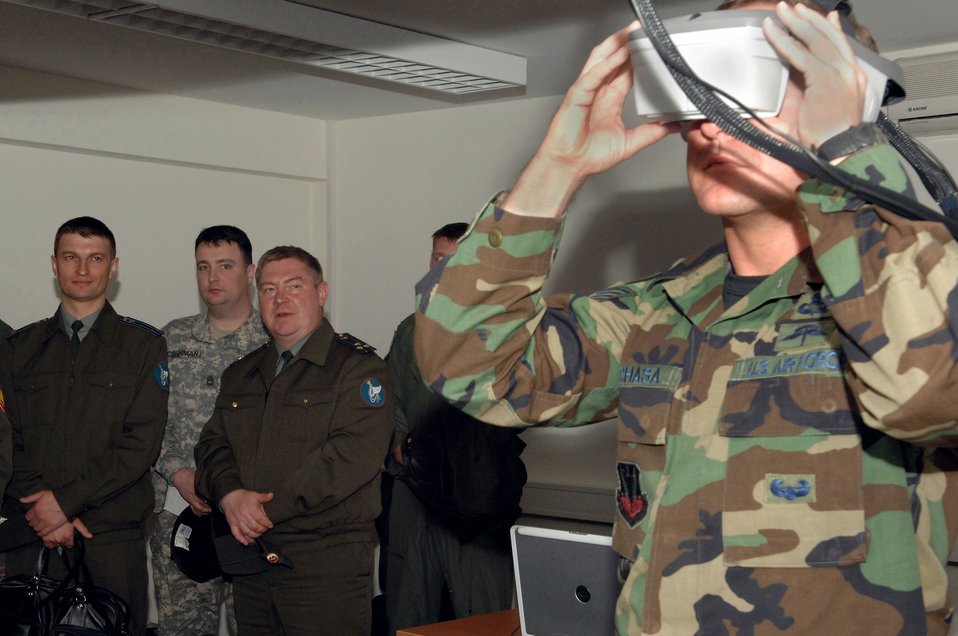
Russian delegation visits USAFE bases

Russian Lt. Col. Sergey Izvenkov and Russian Col. Aleksandu Razygraeu observe as Tech. Sgt. Timothy Pachasa demonstrates the use of the Indirect Fire Forward Air Control Trainer simulator April 30 at the Joint Fighters Center for Excellence at Spangdahlem Air Base, Germany. The simulator is a procedural trainer that simulates close-air support and indirect fires. Sergeant Pachasa is a joint terminal attack instructor at the U.S. Air Forces in Europe Air Ground Operations School from Fort Bliss, Texas.